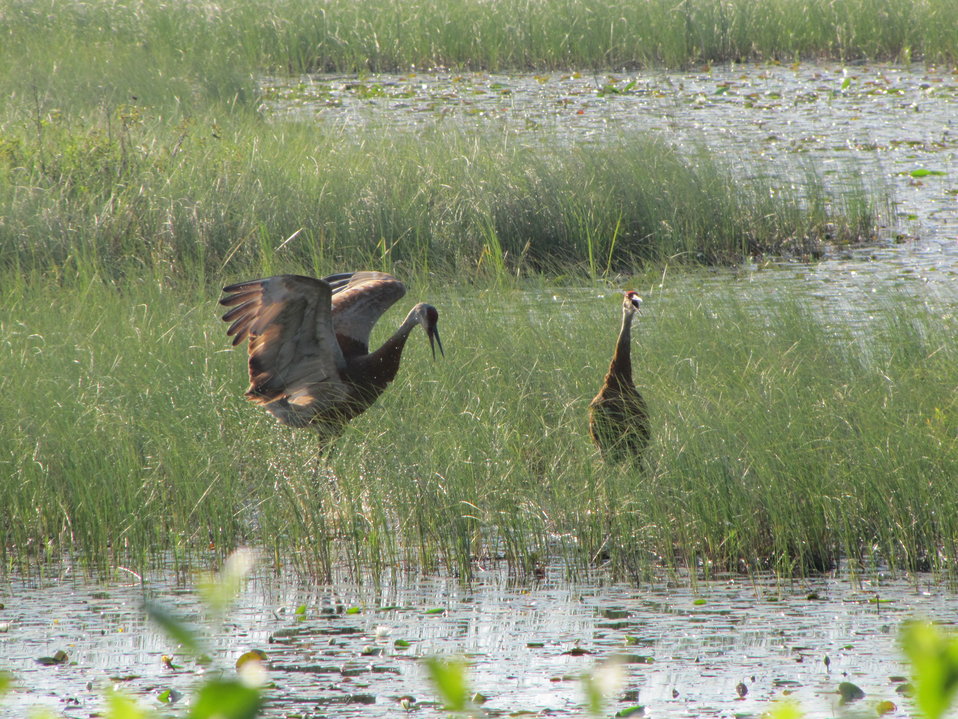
Dancing sandhill cranes at Seney National Wildlife Refuge.